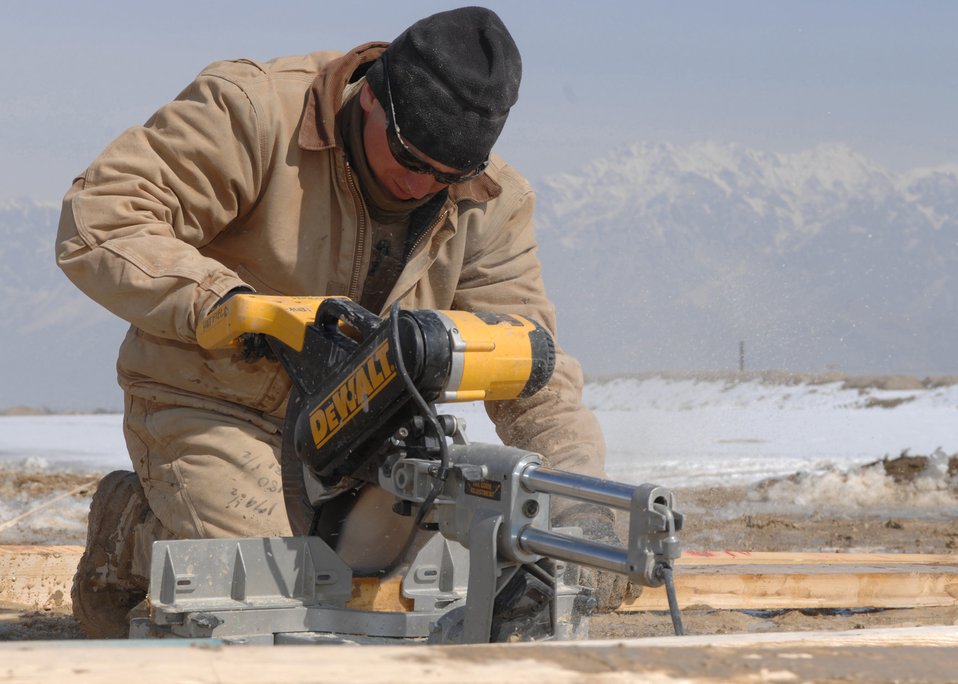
RED HORSE team improves flightline operations

Staff Sgt. Levesque Lucas cuts wood with a saw during construction on a barrier arresting kit on the flightline at Bagram Air Base, Afghanistan, Feb. 13. Sergeant Levesque is from 819th RED HORSE Squadron, Malmstrom Air Force Base, Mont. and is deployed to 1st Expeditionary RED HORSE Group as a structural craftsman.